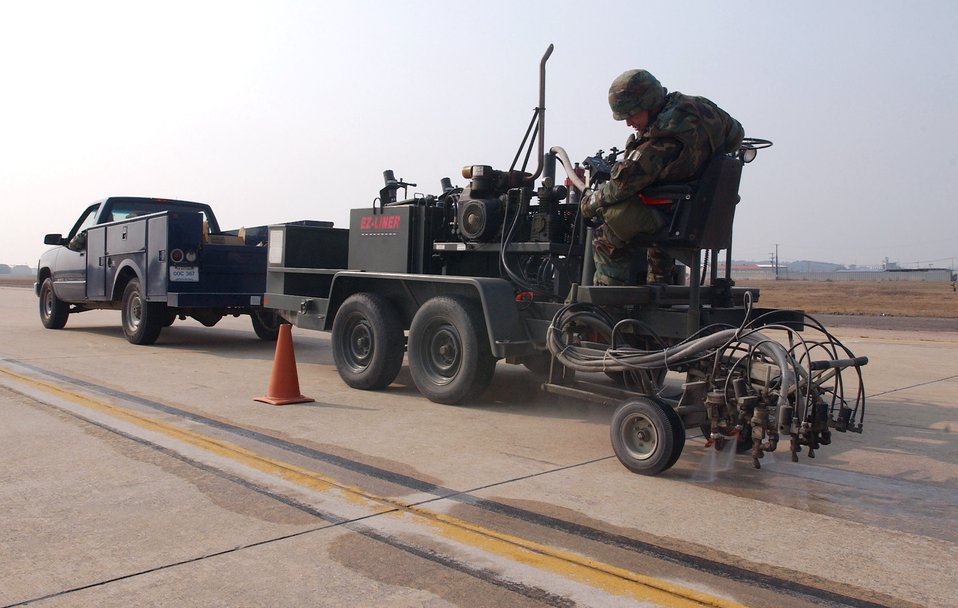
Keeping the runway in tip-top shape

Staff Sgt. Jeremy Matanane prepares a runway for painting Feb. 21 during an operational readiness exercise at Kunsan Air Base, Korea. Sergeant Matanane is a structural craftsman in the 8th Civil Engineer Squadron and is a member of the airfield damage repair team. ADR teams do everything from crater repair to airfield lighting making it possible to get aircraft back in the air quickly.